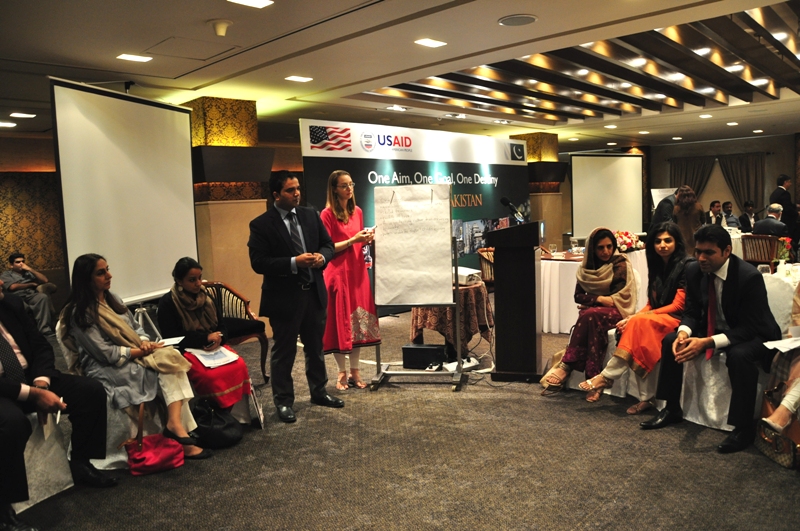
Group Discussion